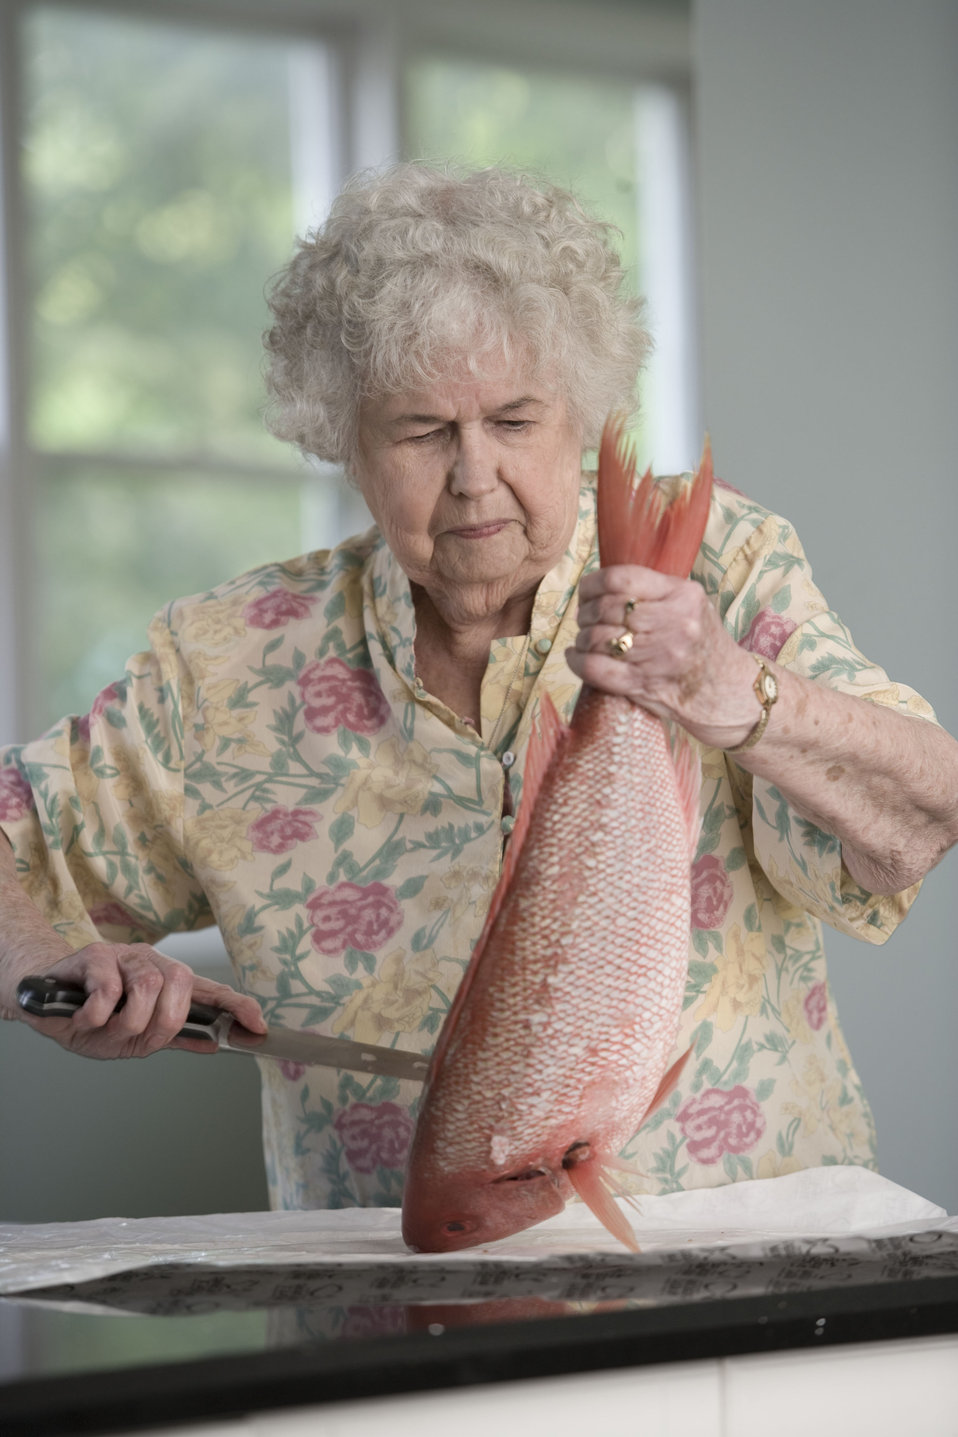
Here, an elderly woman was in the process of preparing a fresh fish on her clean kitchen counter. Carefully using a large knife, the woman was removing the scales beginning at the tail, moving towards the fish's head.